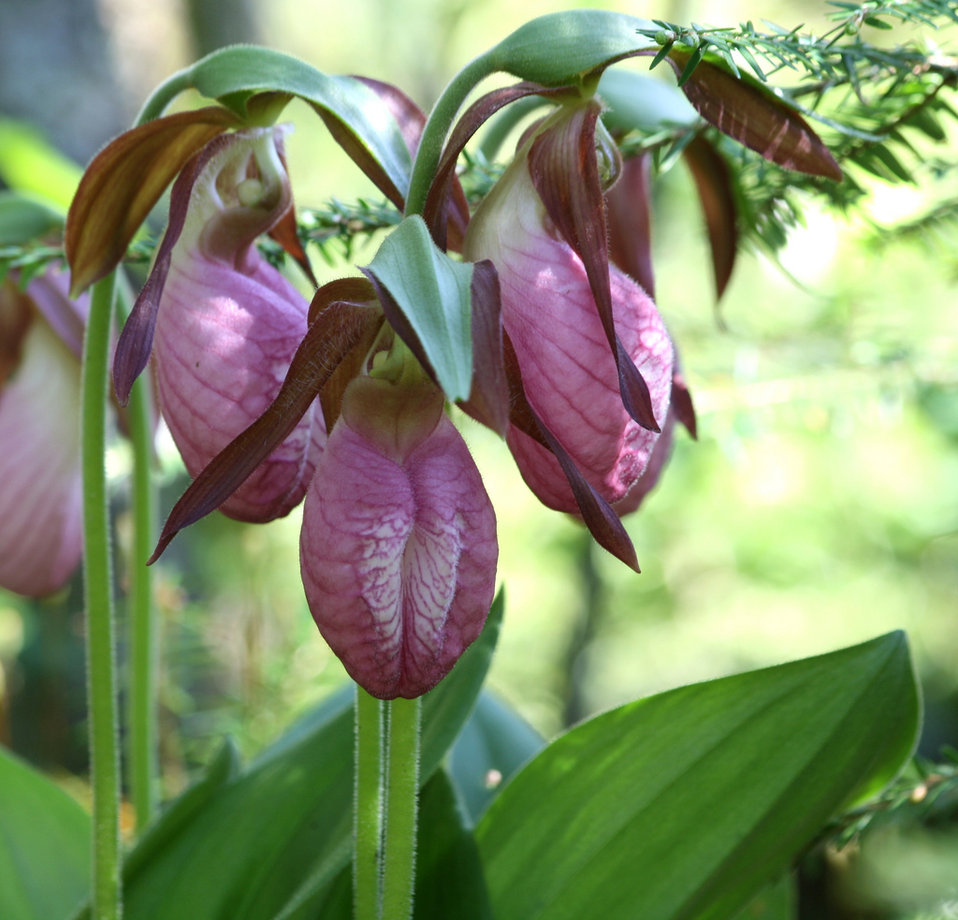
Lady Slippers

A grouping of Lady Slippers in a shady corner of Canaan Valley National Wildlife Refuge.